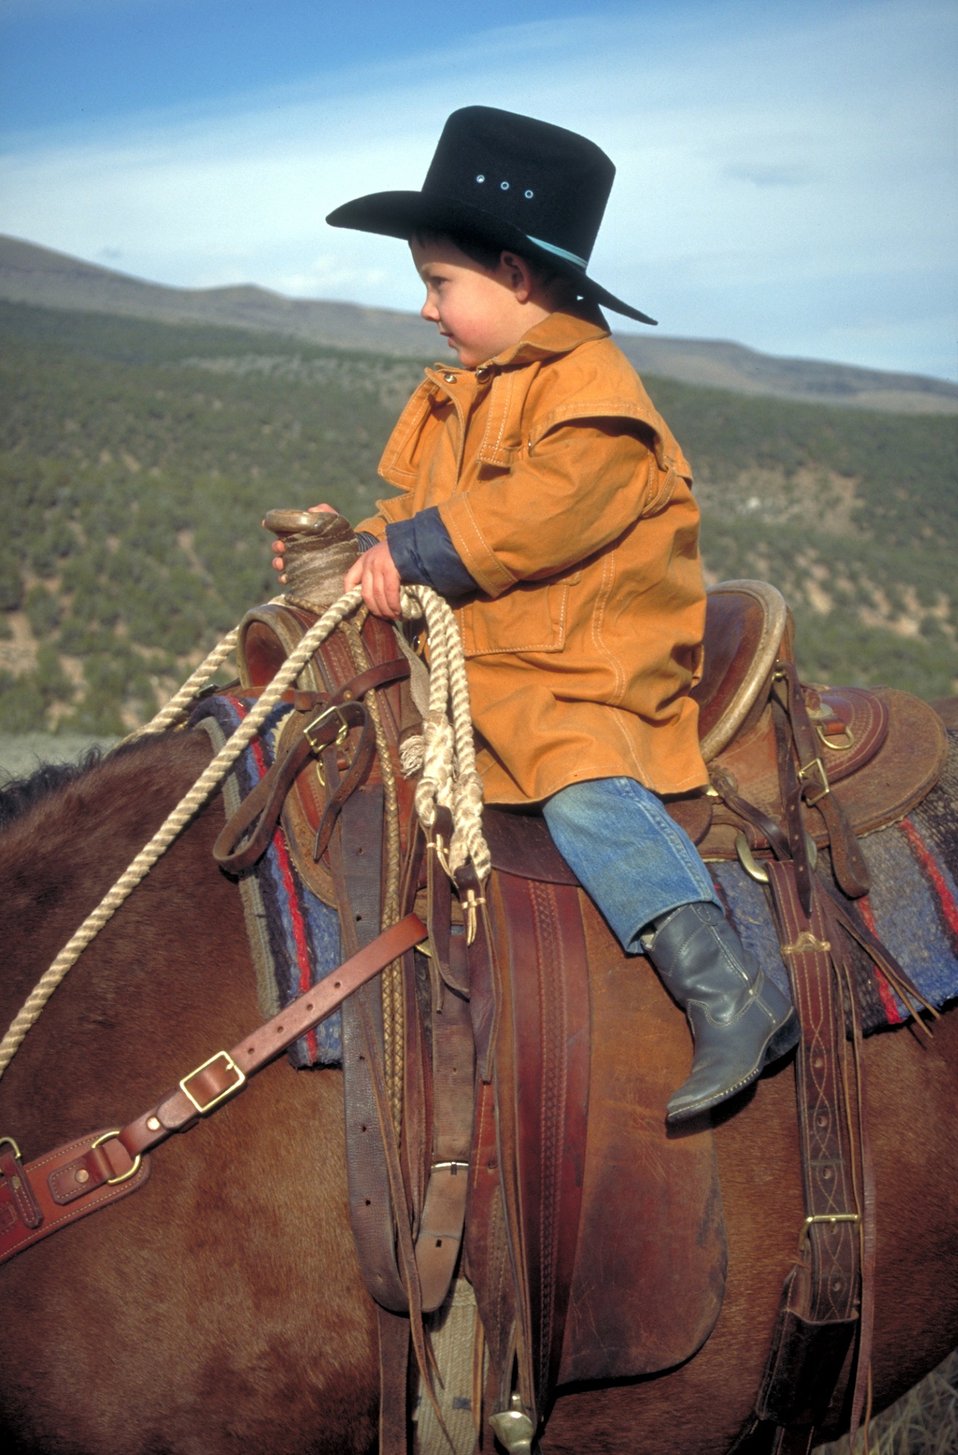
Working cowboys living near Vernal, Utah.